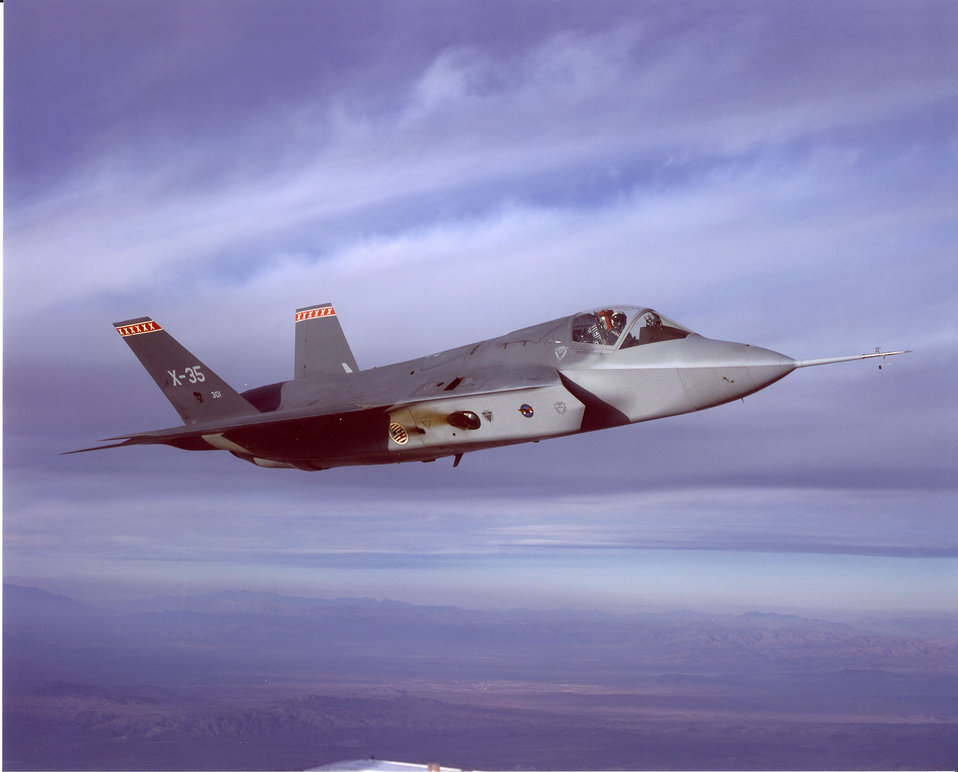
Lockheed-Martin X-35A first flight

The Lockheed-Martin X-35A concept demonstrator completed its first flight on Oct. 24, 2000. Along with the short-takeoff and vertical landing X-35B and the carrier version X-35C, it was selected to enter full-scale development in the tri-service and multi-national Joint Strike Fighter program in 2001.